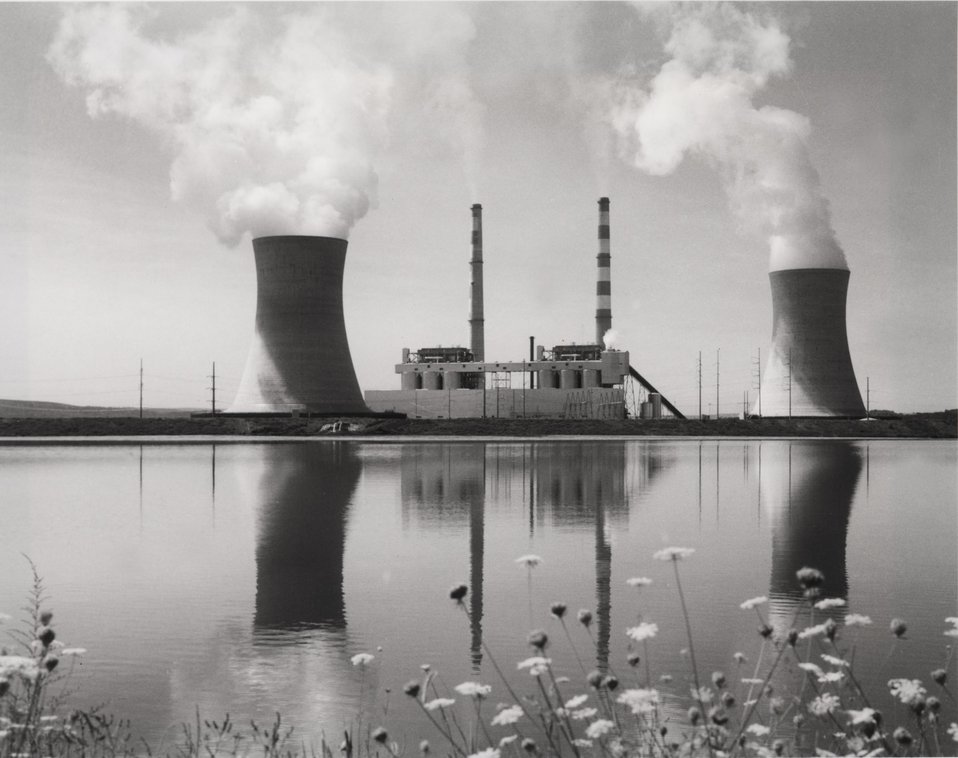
The Montour Steam Electric Station, located near Washingtonville, Montour County, is a coal-fired two-unit facility with a total capacity of 1.5 million kilowatts.